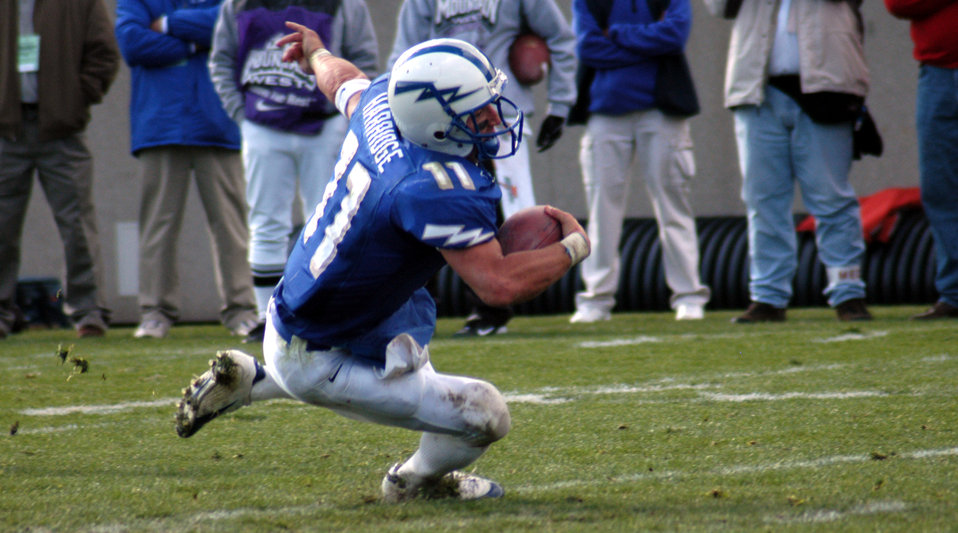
Falcons fall in triple overtime

U.S. AIR FORCE ACADEMY, Colo. -- Falcons quarterback Chance Harridge slips during the two-point conversion attempt in triple overtime of the Mountain West conference first place battle against the University of Utah on Nov. 1. Utah scored a touchdown and converted on a two-point conversion to win 45-43.